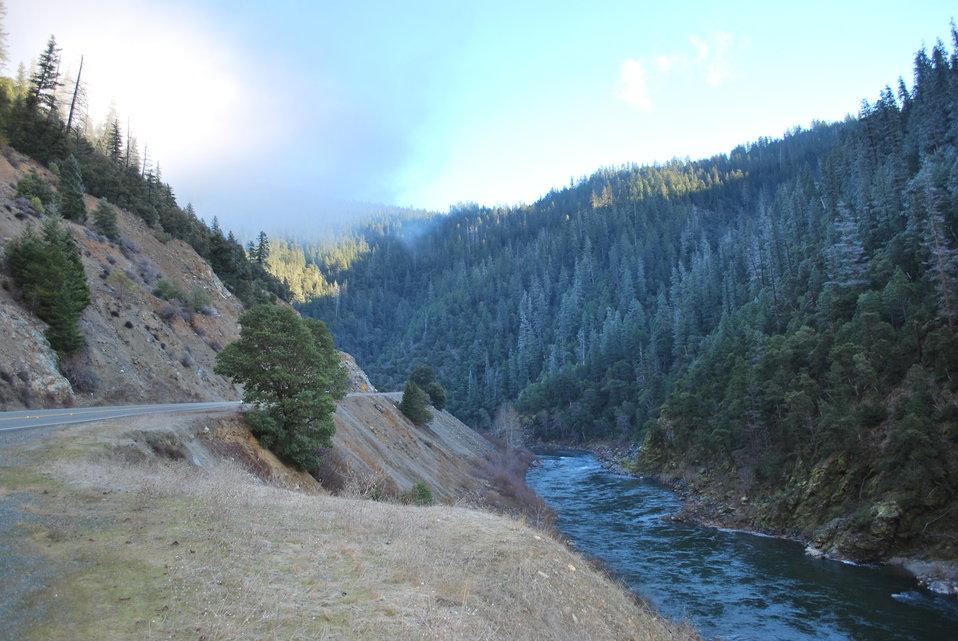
Klamath River

Highway 96 follows a course along the Klamath River in Northern California. The Klamath is the thrid most productive river along the Pacific Coast